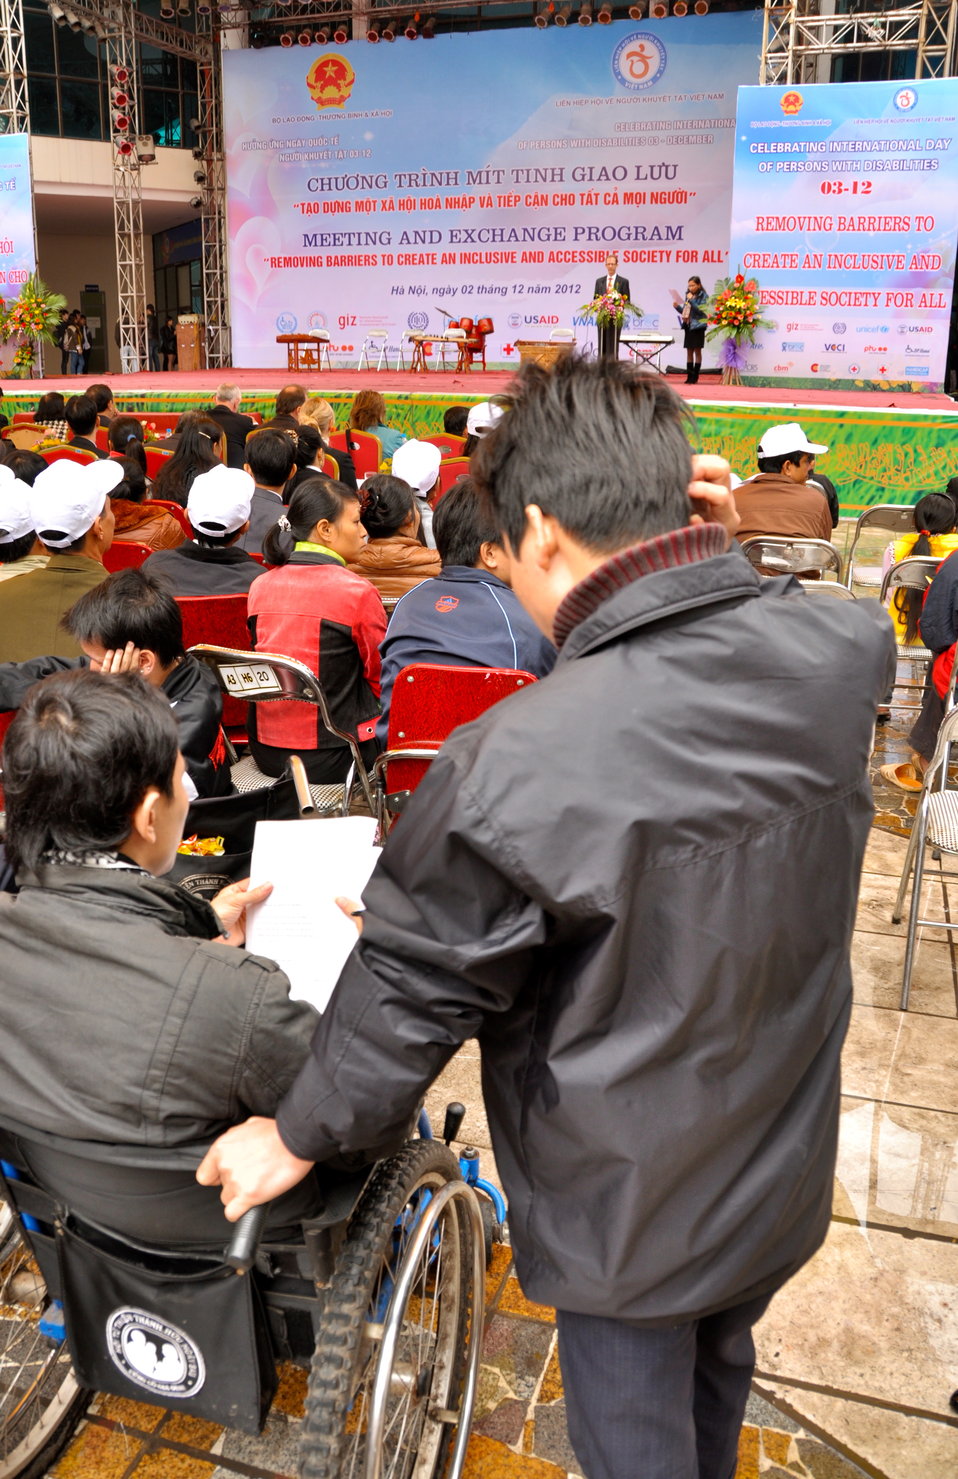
USAID joins celebration of International Day of Persons with Disabilities in Hanoi, Vietnam

December 2, 2012